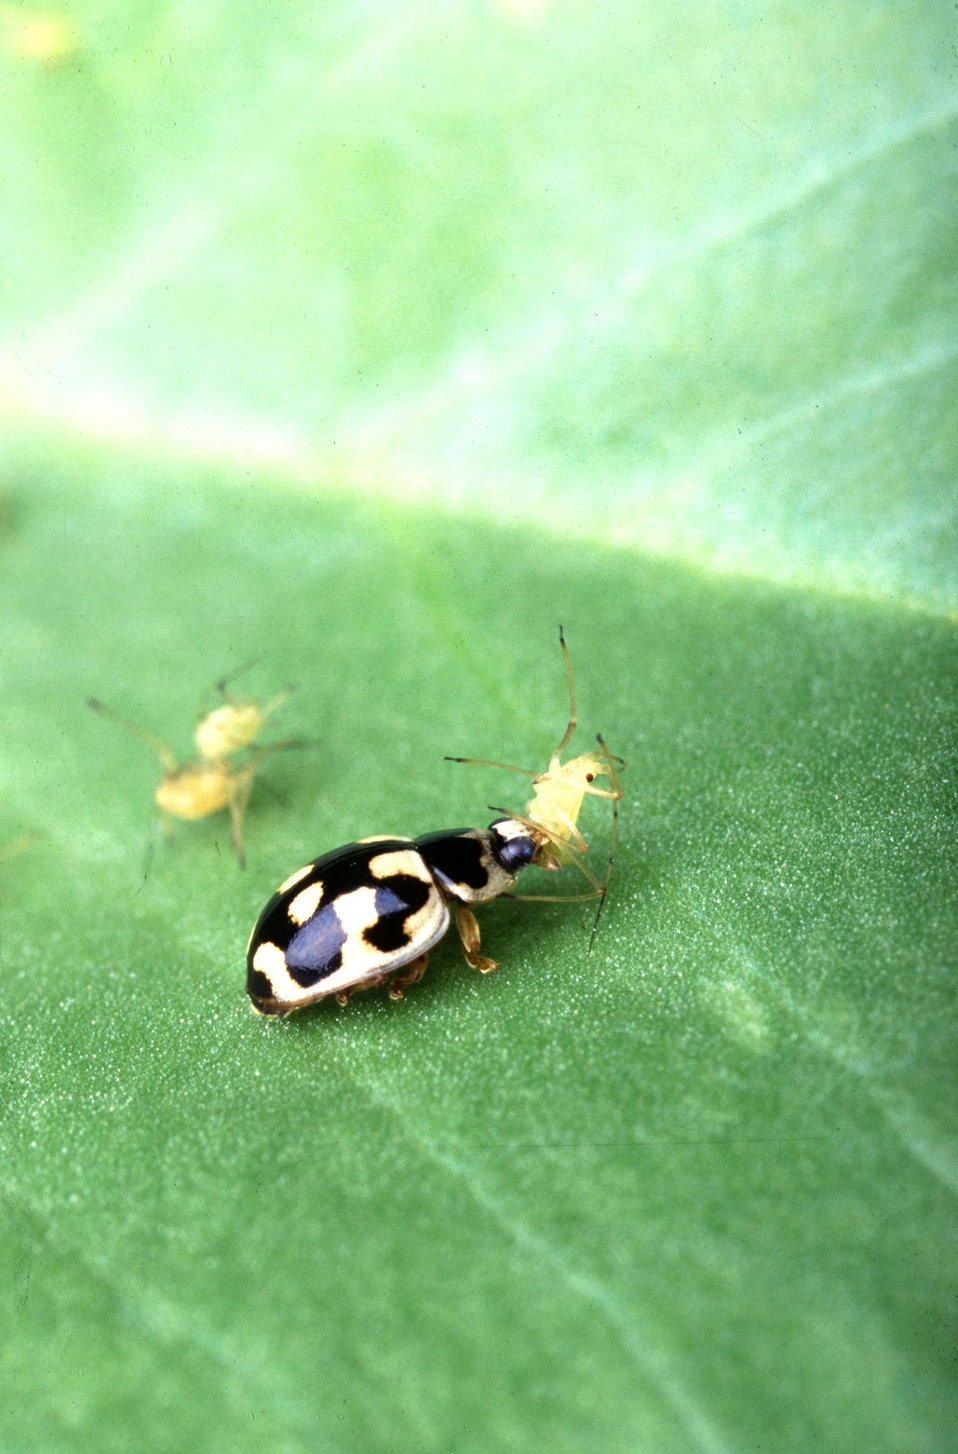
A 14-spotted ladybug (Propylea quatuordecimpunctata, or P-14) devours a pea aphid.